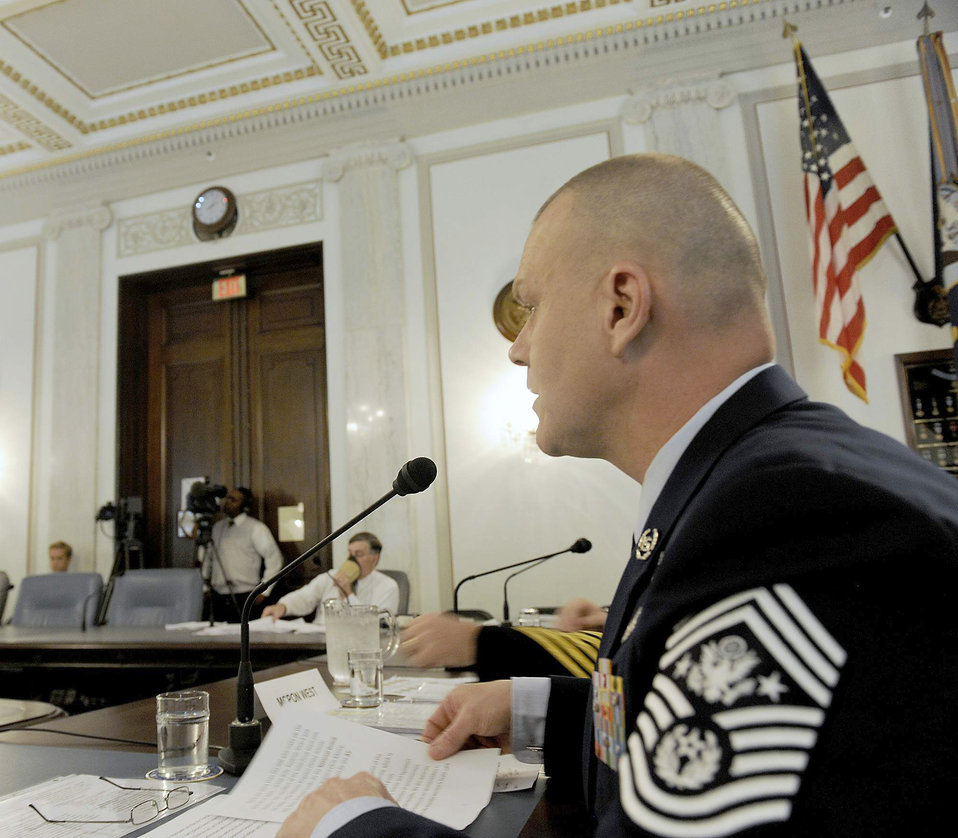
Chief Roy

Chief Master Sgt. of the Air Force James A. Roy (right) gives his opening statement during a Senate Armed Services subcommittee hearing on military personnel issues April 13, 2011, in Washington. Chief Roy's counterparts from the Army, Navy and Marine Corps joined him on the panel.